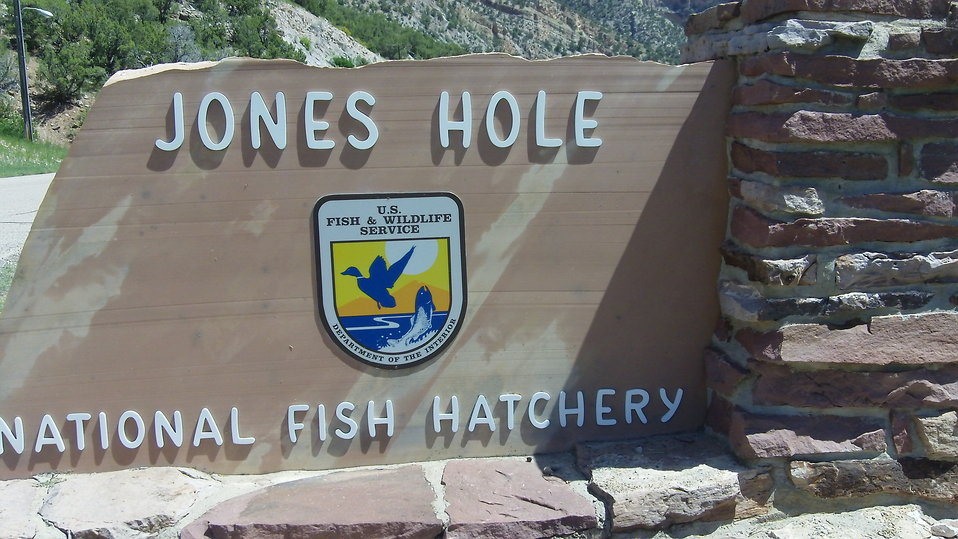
Jones Hole Entrance Sign

Entrance sign at Jones Hole National Fish Hatchery in Utah.